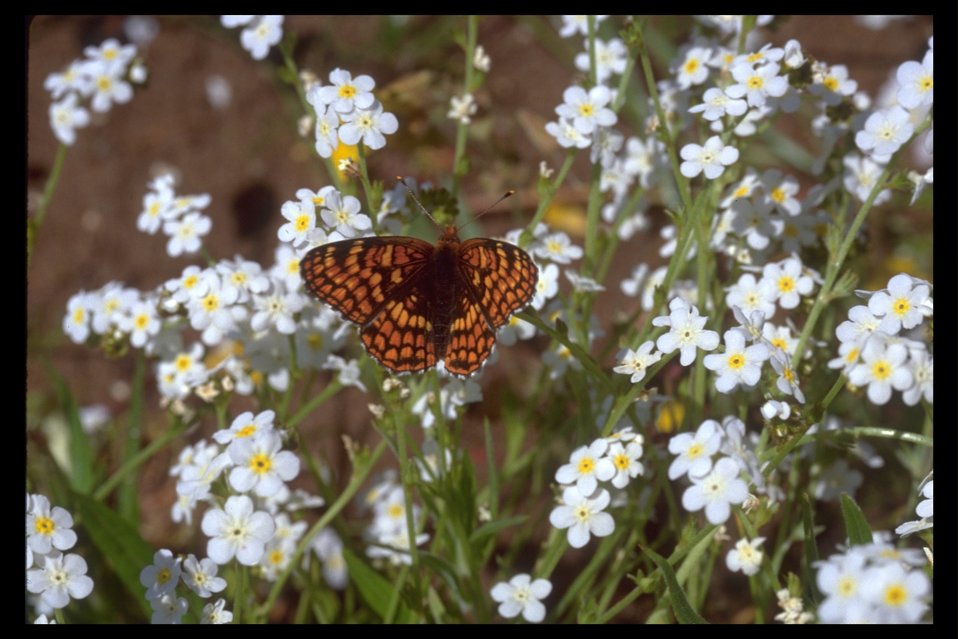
Fragrant Popcorn Flower (Plagiobothrys figuratus) located west of Meadows Road, near Beagle Road. Note: this species is rare!